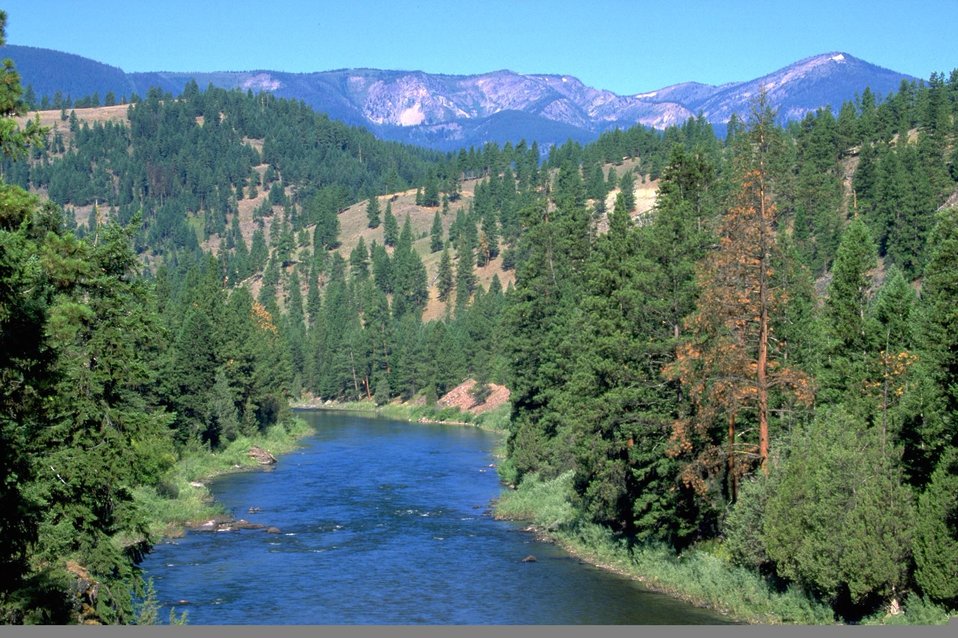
Blackfoot River